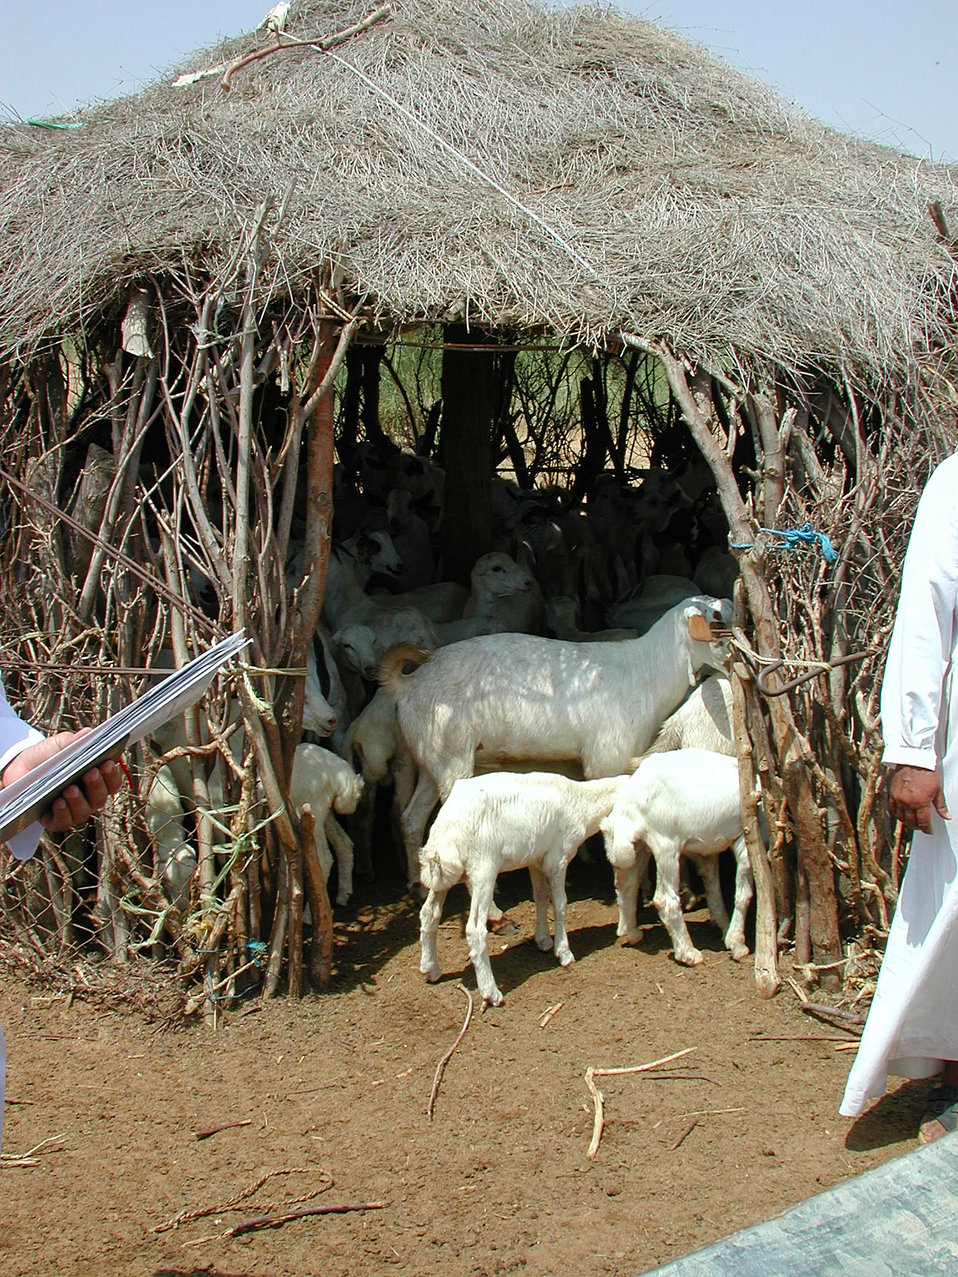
This 2000 photograph was captured during an epidemiologic investigation in Saudi Arabia that had been initiated as a response to a Rift Valley fever (RVF) outbreak in the region. These goats were penned in a village that was within the geographic parameters of the investigation.